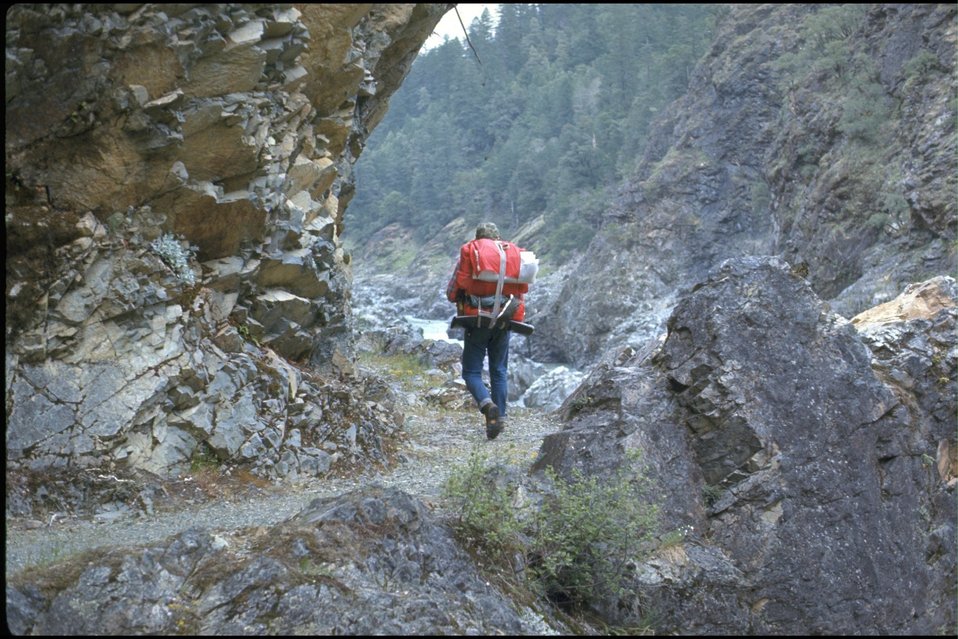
Rogue River Trail, Hiker.